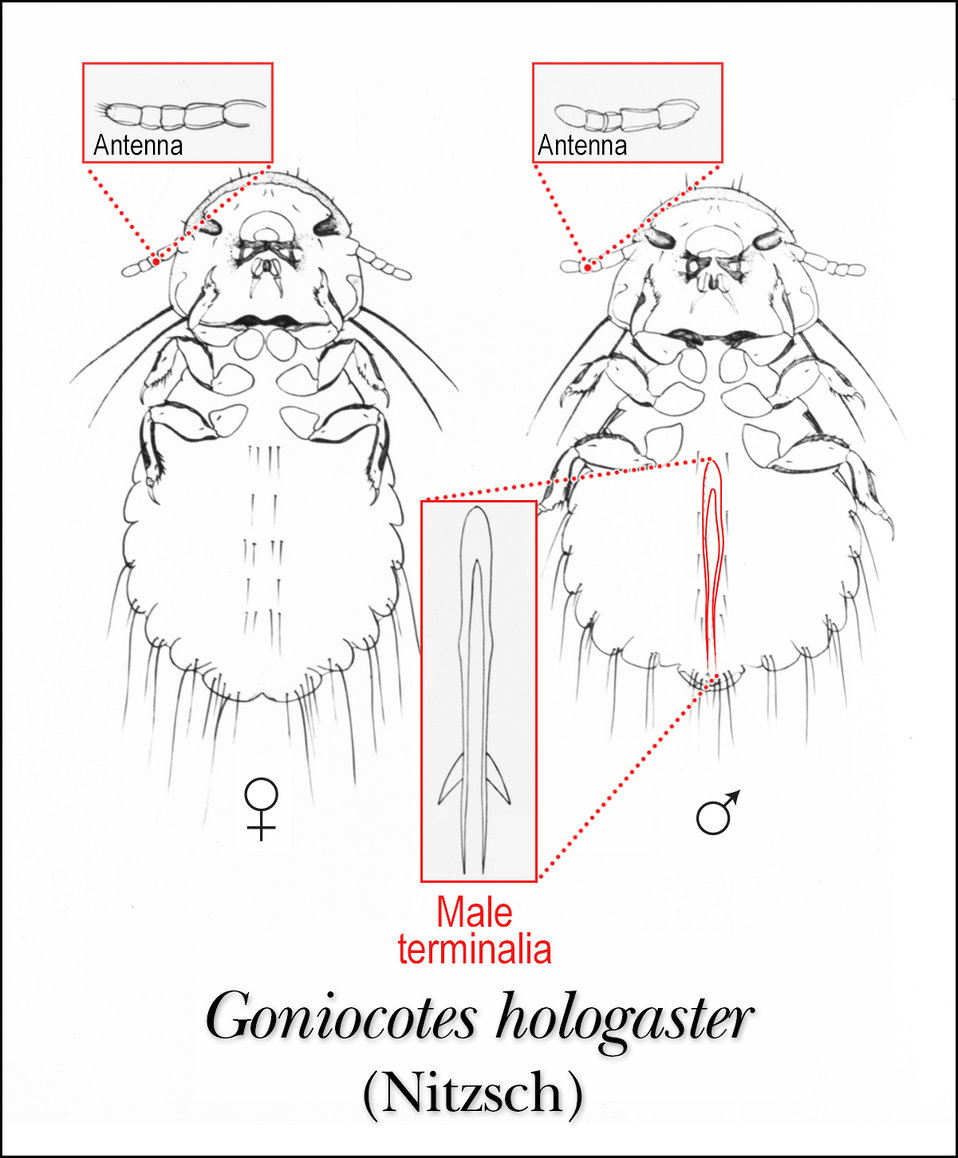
This illustration of the female and male lice, Goniocotes hologaster, shows the ventral aspect of this species.